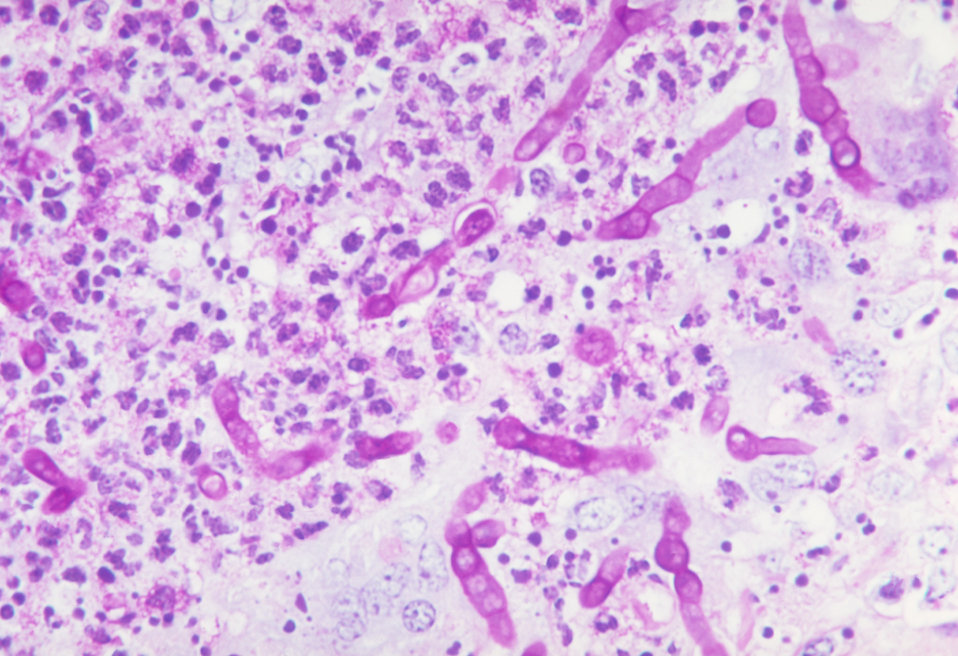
This was a case of phaeohyphomycosis of subcutaneous tissue due to the fungus Curvularia harveyi.